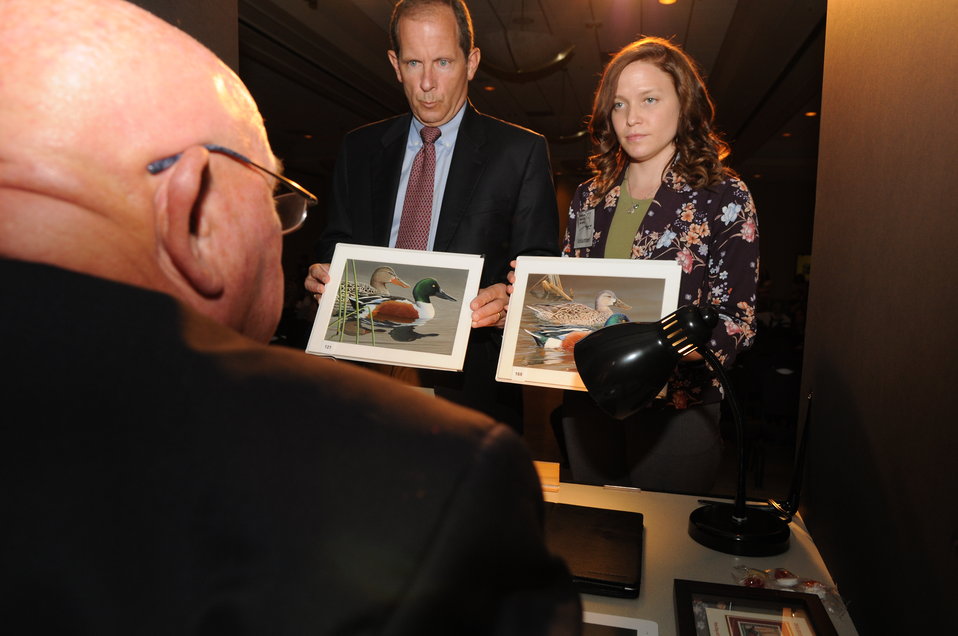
Judging

The U.S. Fish & Wildlife Service sponsored the 2012 Federal Duck Stamp Art Contest September 28 and 29 in Ogden, Utah, at Weber State University. A panel of five judges was responsible for choosing the art work used to design the 2013-2014 Migratory Bird Hunting and Conservation Stamp.